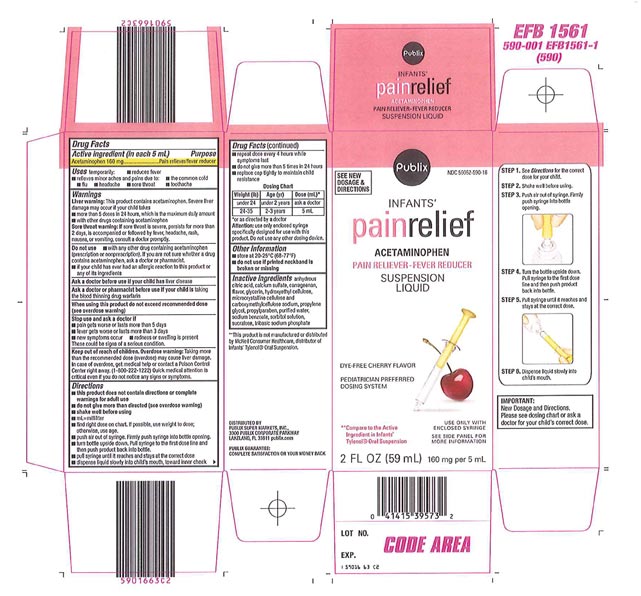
Recalled - Acetaminophen infant suspension liquid

November 1, 2013 – Product Recall – Perrigo Initiates Nationwide Voluntary Product Recall of Acetaminophen Infant Suspension Liquid, 160 Mg/5 Ml, Due to a Potential Defect with the Co-packaged Oral Syringe.